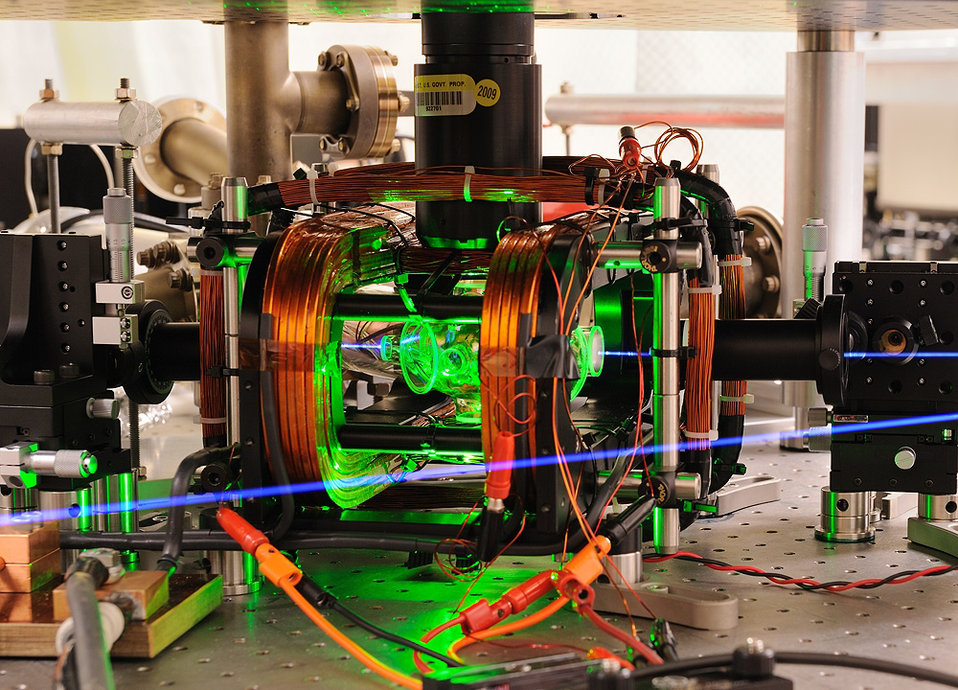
Microwave Apparatus

Composite photo of microwave apparatus used in NIST quantum computing experiments. A pair of ions (electrically charged atoms) are trapped by electric fields and manipulated with microwaves inside a glass chamber at the center of the apparatus. The chamber is illuminated by a green light-emitting diode for visual effect. An ultraviolet laser beam used to cool the ions and detect their quantum state is colorized to appear blue.